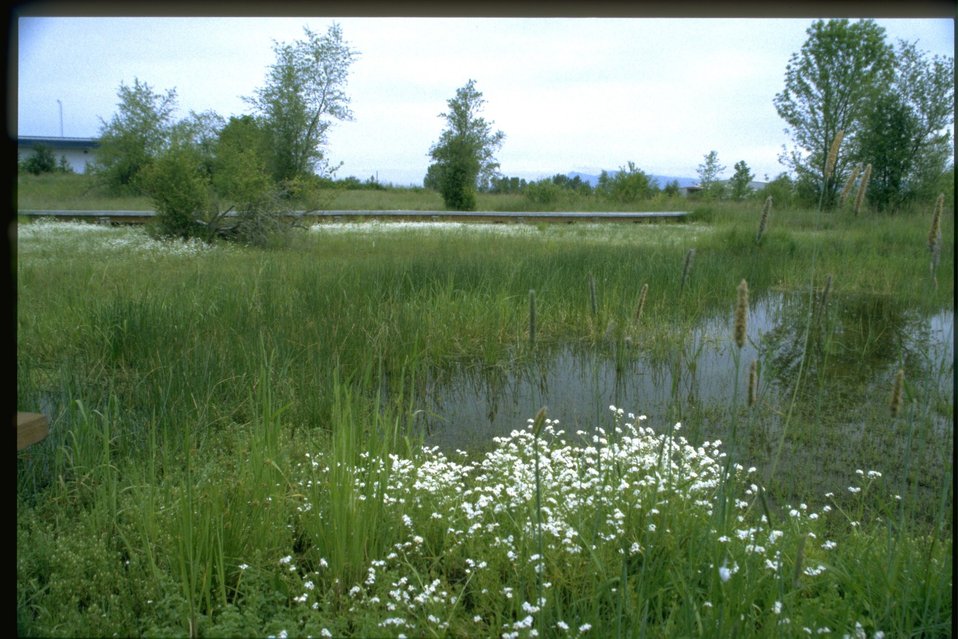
Far shot of Plagiobothrys figantus.